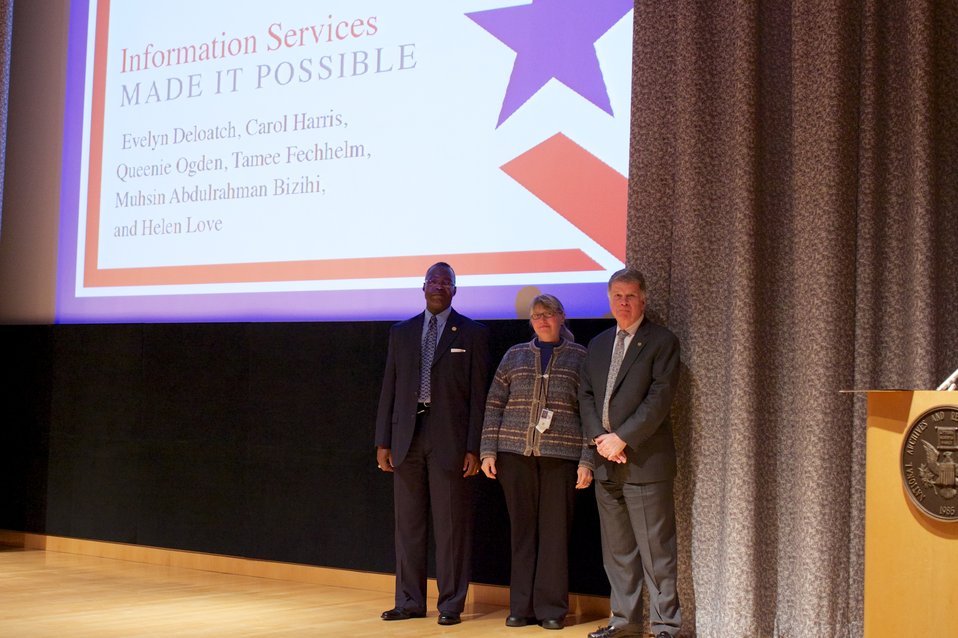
CFC Recognition Event